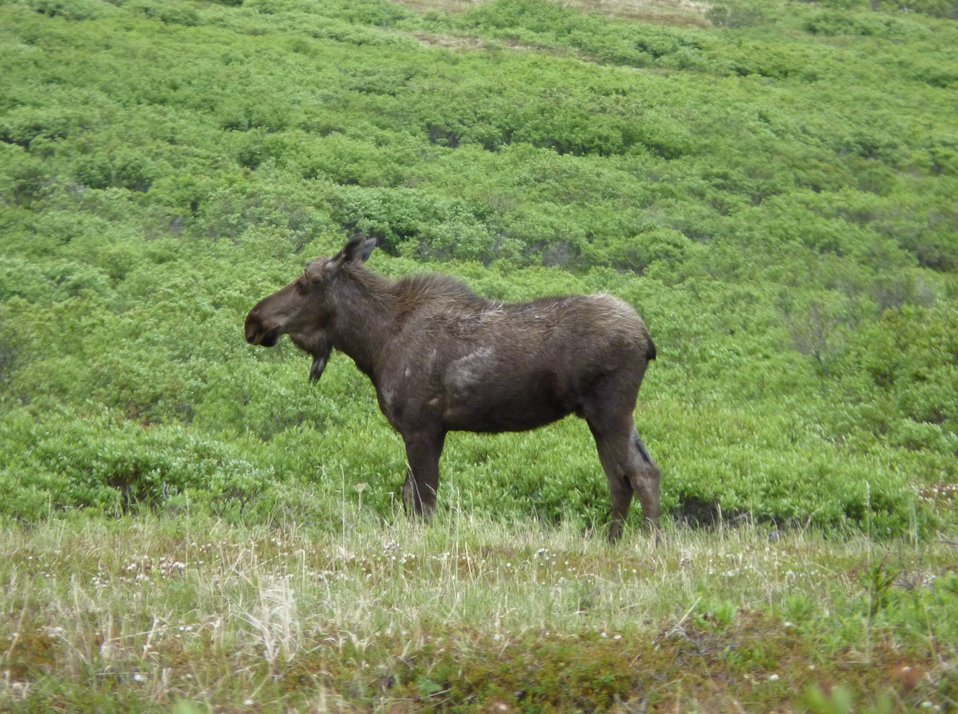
Moose

Andreafsky Wilderness, Yukon Delta National Wildlife Refuge